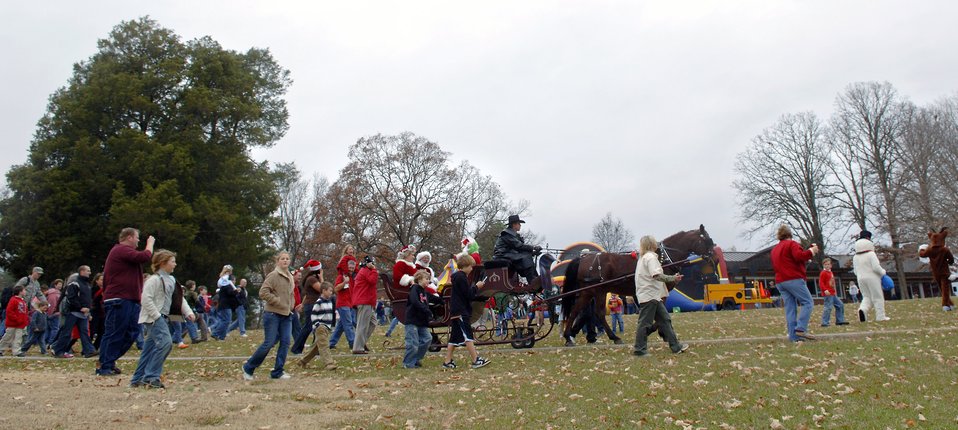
Santa brings holiday cheer to Arnold party

Santa and Mrs. Claus arrive at the Lakeside Club by sleigh after flying in to Arnold Air Force Base, Tenn., Dec. 2 for the annual holiday Christmas party.